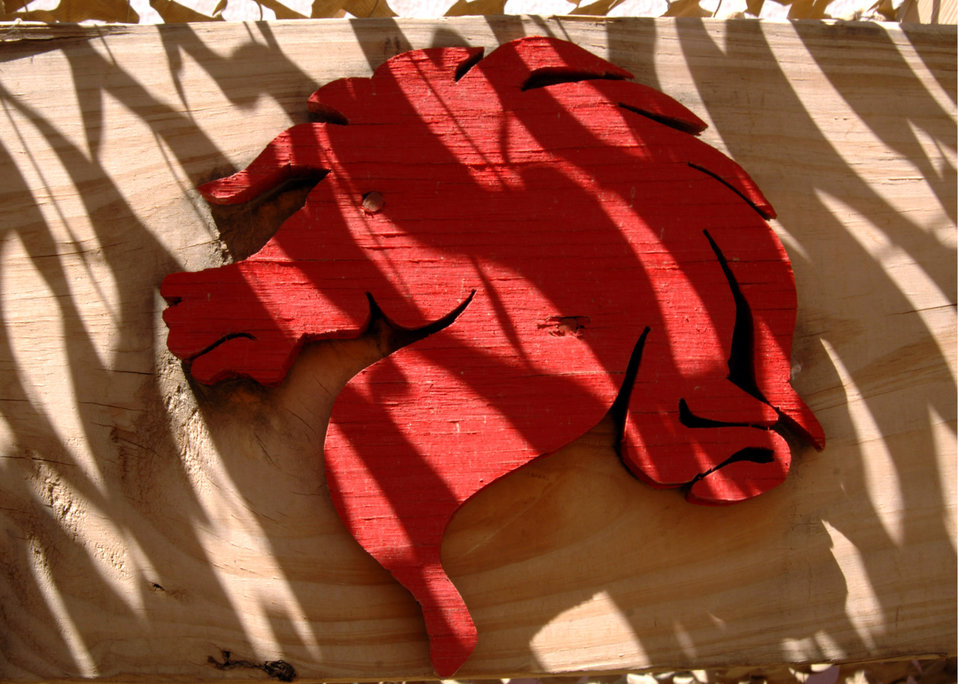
RED HORSE: Mobilized engineering at its finest

The red horse shield signifies unit pride and excellence in construction. The shield pictured here is at Balad Air Base in Iraq, where the 557th Expeditionary Rapid Engineer Deployable Heavy Operational Repair Squadron, or RED HORSE is headquartered under the 732nd Expeditionary Mission Support Group.